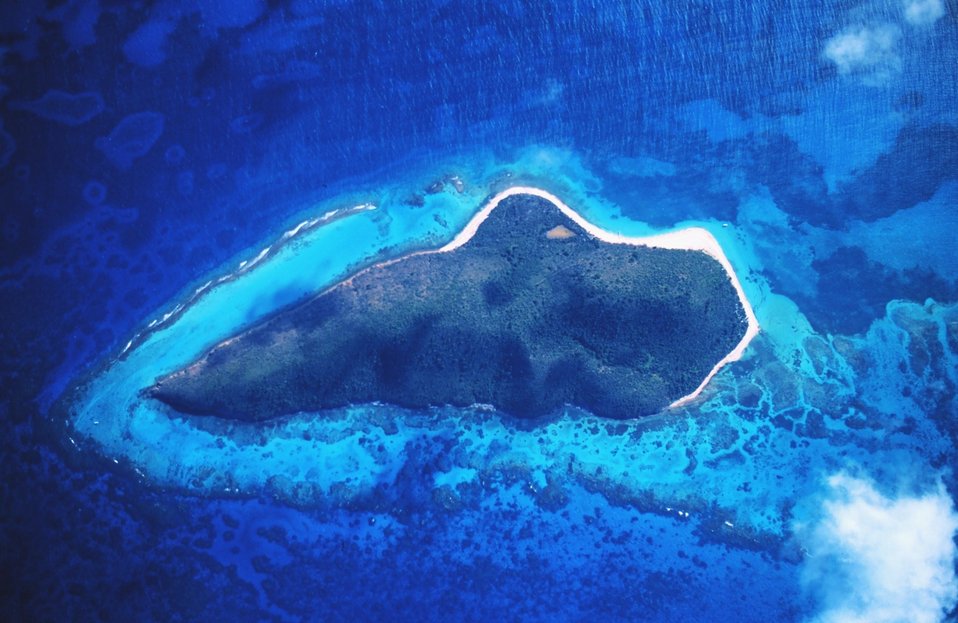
Buck Island Reef National Monument - a jewel in a tropical sea.